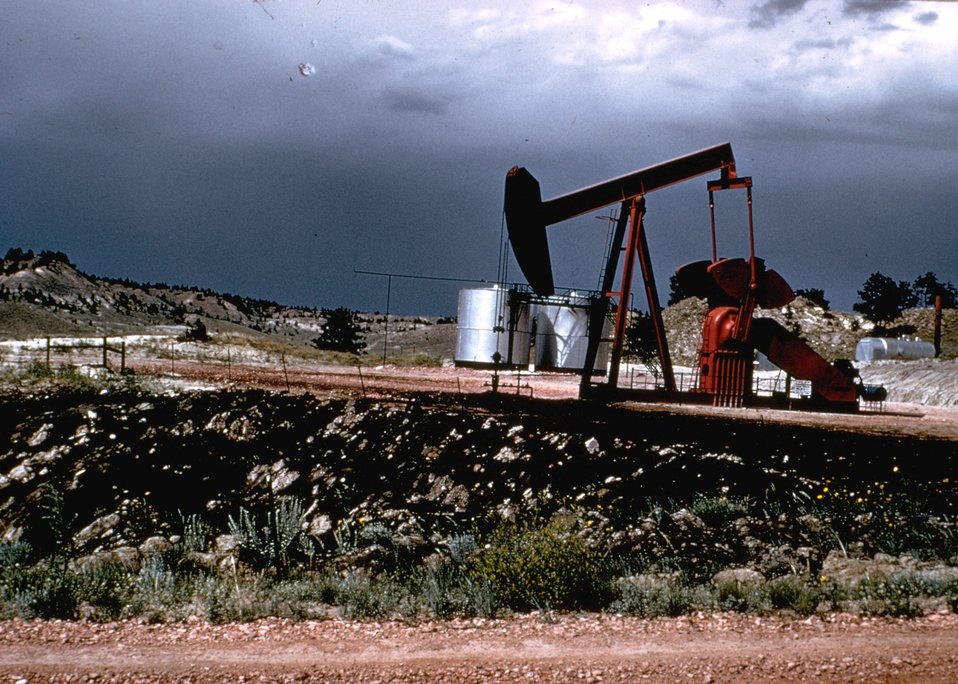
Oil well and associated facilities.